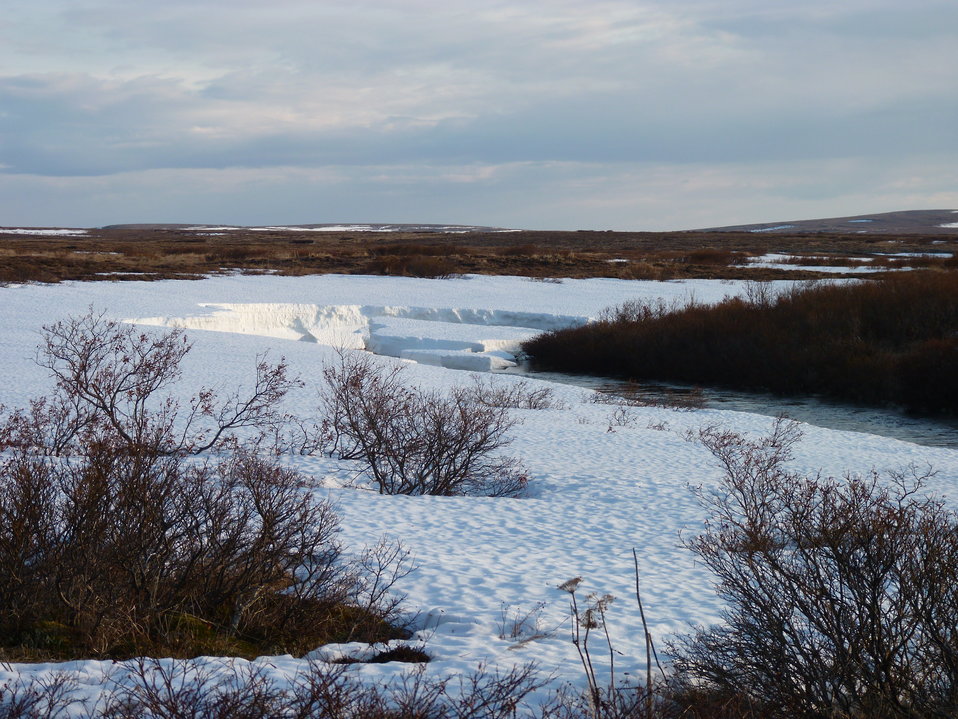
Allen Creek in May

Andreafsky Wilderness, Yukon Delta National Wildlife Refuge